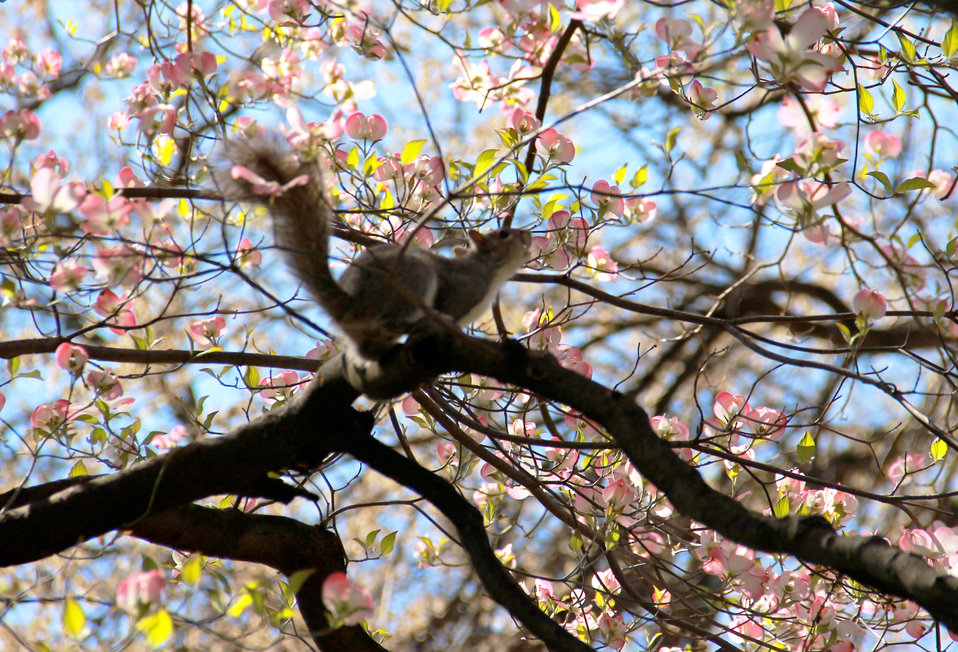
Squirrel in Pink Dogwood in Capitol Square

The AOC has recently uncovered 113 years of history surrounding squirrels on Capitol Hill: www.aoc.gov/cc/grounds/Squirrels-on-the-Capitol-Grounds.cfm.